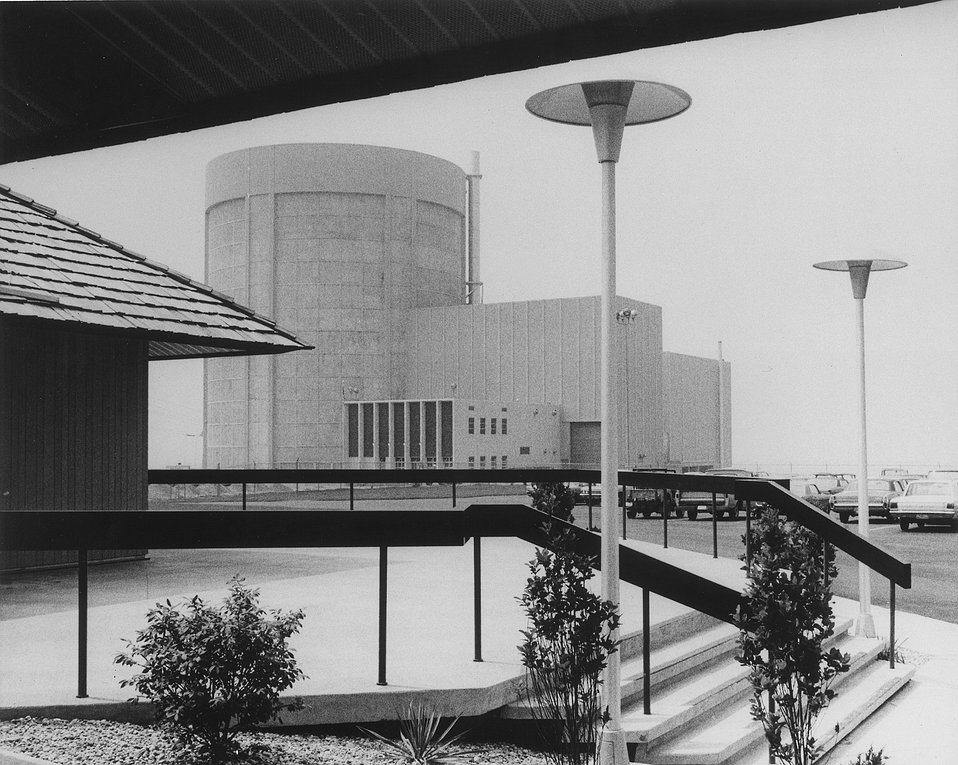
With beat supplied by a pressurized water nuclear reactor, the Palisades Nuclear Power Station can generate 700,000 kilowatts of electricity. Circa 1971.